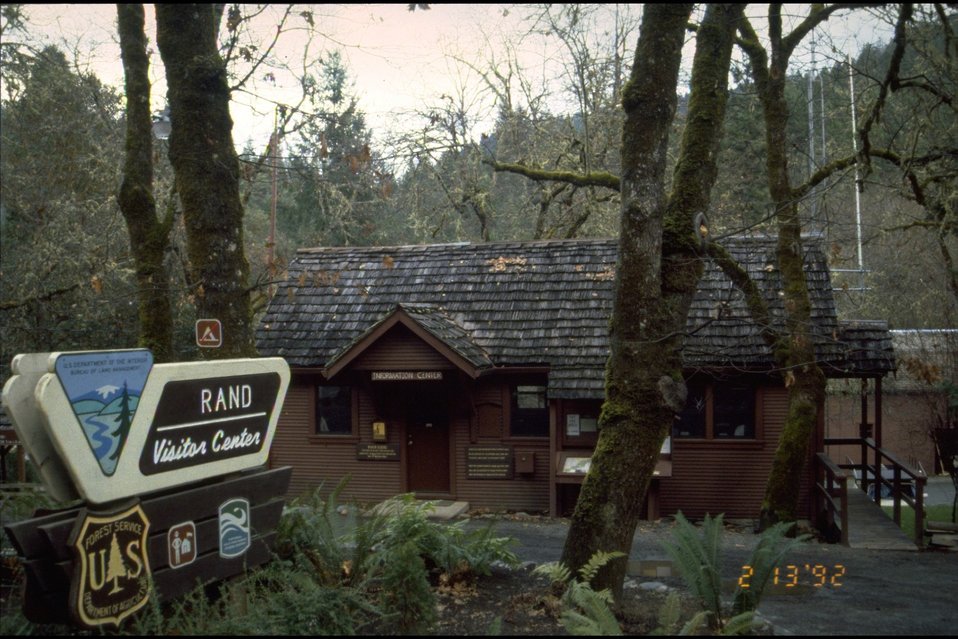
Smullin Visitor Center at Rand. Front of Visitor Center and sign by road.